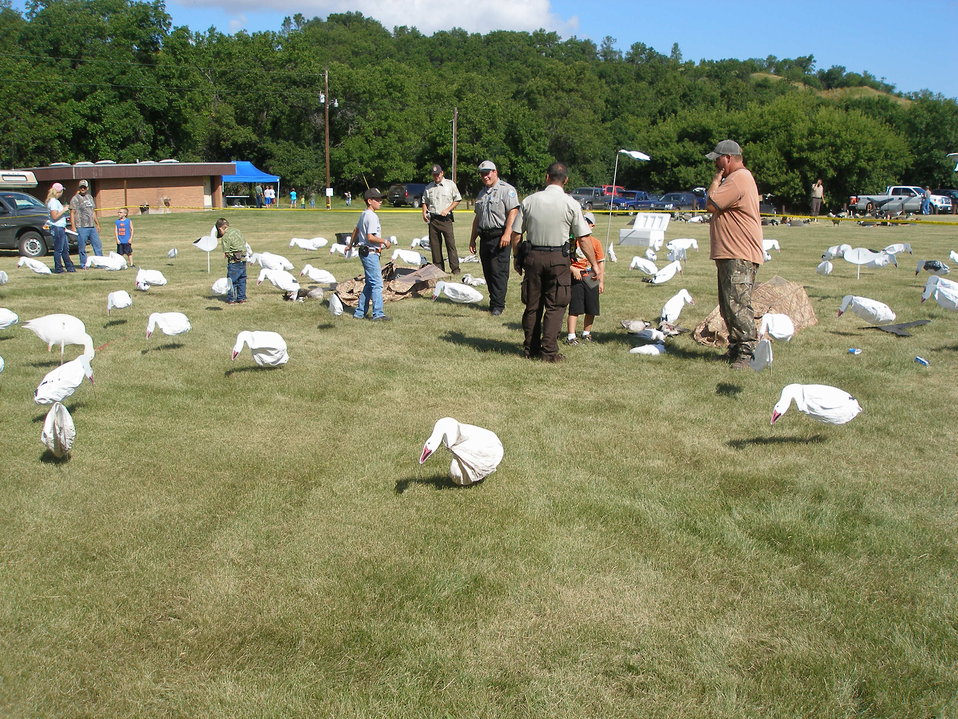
2011 Greenwing Day - Game Warden scenario session

Des Lacs National Wildlife Refuge, Tasker's Coulee